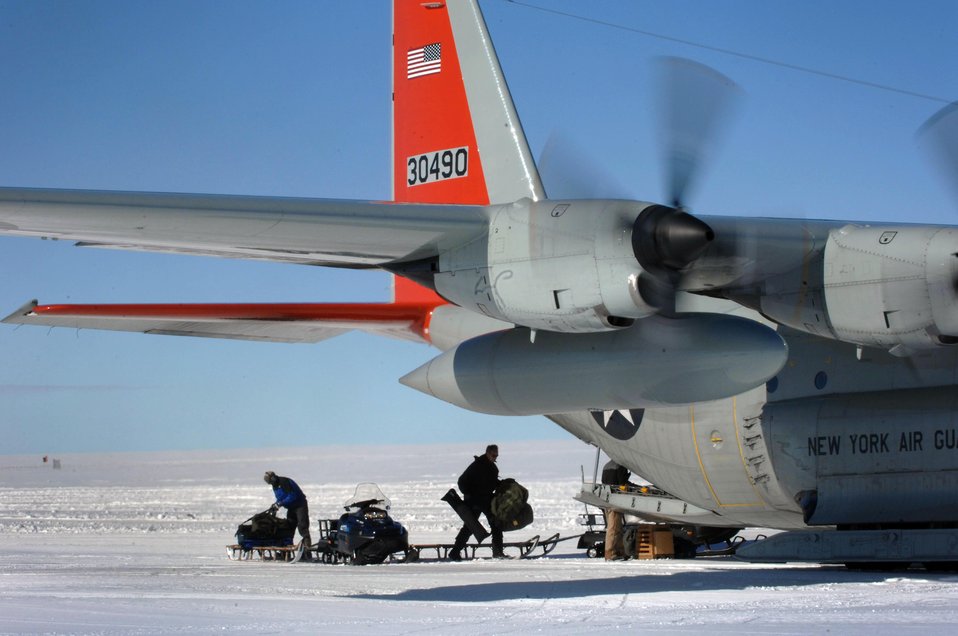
Polar mission

Supplies are loaded from a sled onto a ski-quipped LC-130 Hercules July 28, 2010, at a remote science research outpost in Greenland. The New York Air National Guard's 109th Airlift Wing is the only military unit in the world to fly such aircraft and has flown missions to Greenland since 1975. The unit now provides airlift support to National Science Foundation's polar research program there.